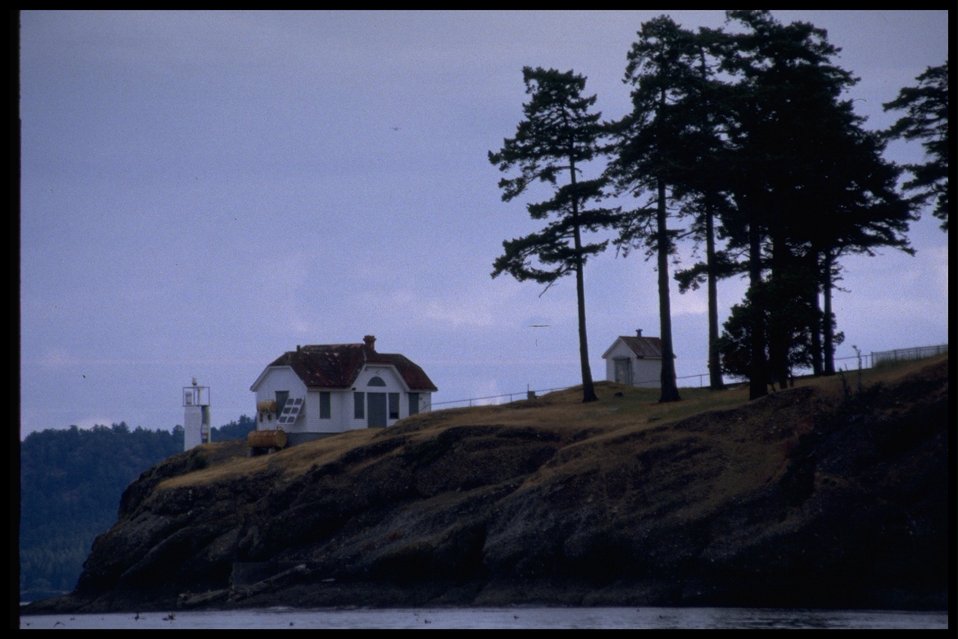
Turn Point from water with light station and buildings. Series of 17 photos.